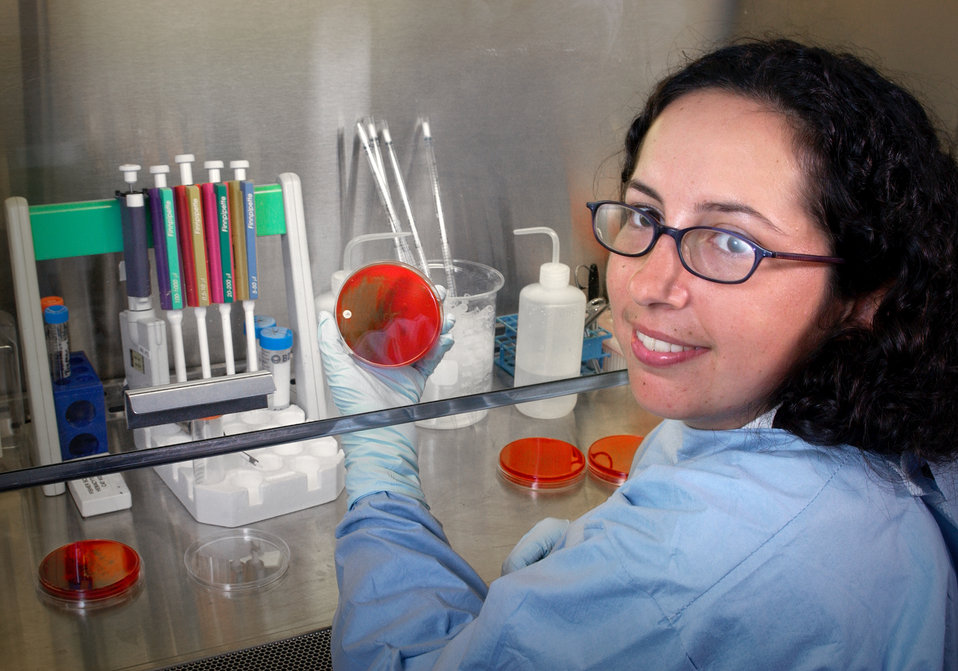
Training as a fellow in the CDC's Respiratory Diseases Branch, Nina Glass was shown here examining specimens in a containment lab, while working underneath a flow hood. Using negative pressure, the hood prevents the contaminants from being free to migrate out into the general laboratory environment.